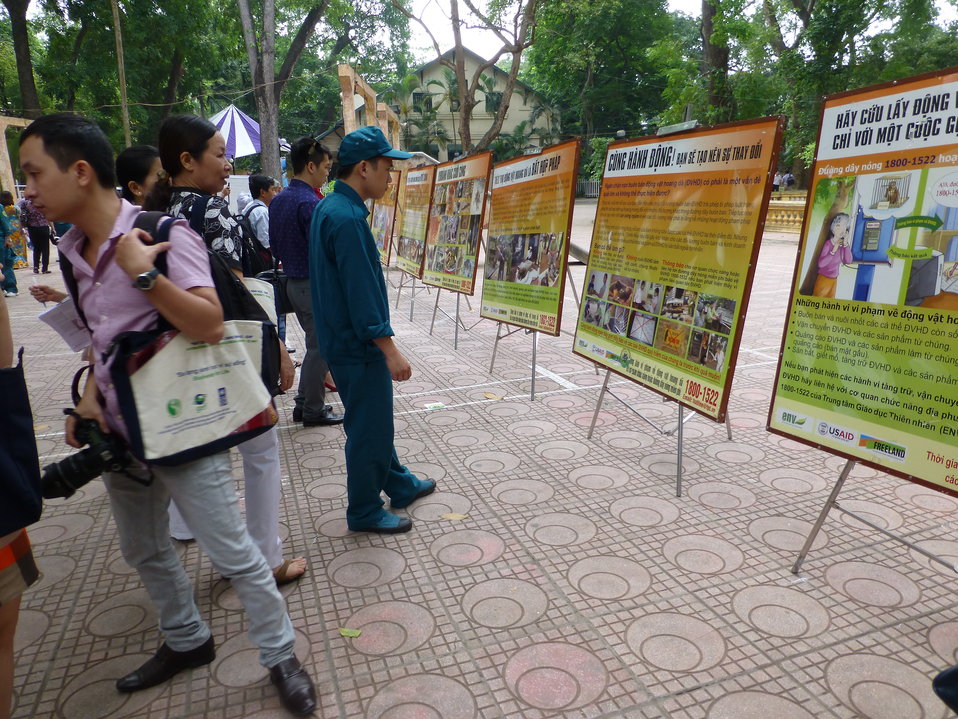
USAID Supports International Day for Biological Diversity in Hanoi